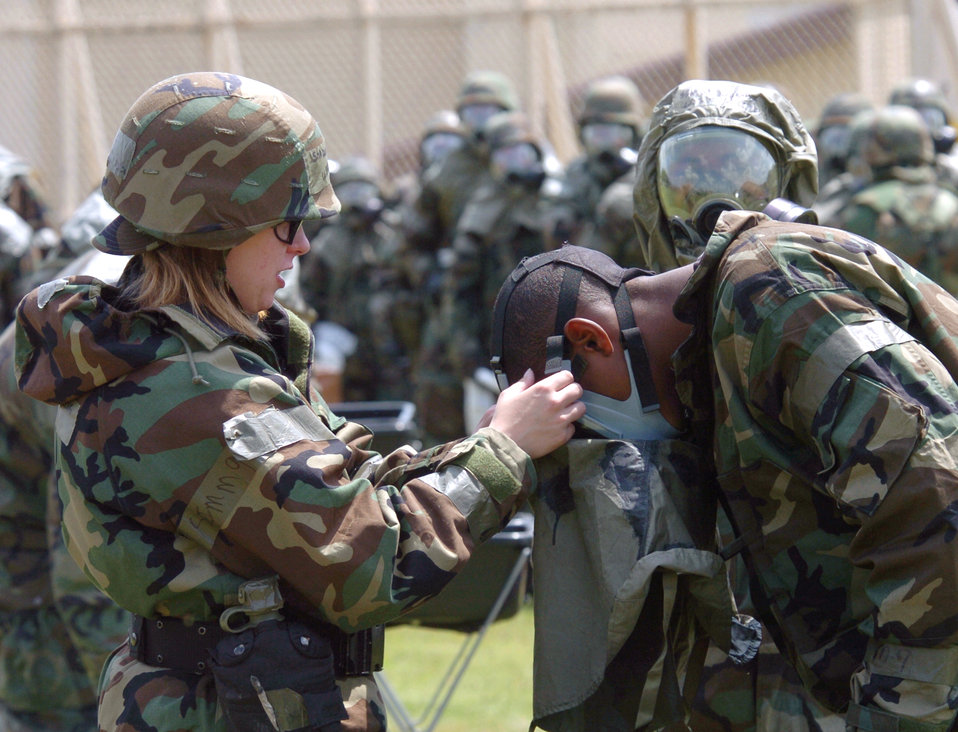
Civil engineers train for chemical attacks

YOKOTA AIR BASE, Japan -- Senior Airman Danielle Ring (left) helps an Airman with his gas mask at the contaminated control area during